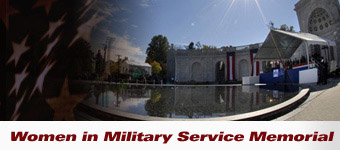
Women in Military Service for America Memorial

The Women in Military Service for America Memorial celebrated its 10th anniversary in 2007. Secretary of Defense Robert Gates spoke at the ceremony.